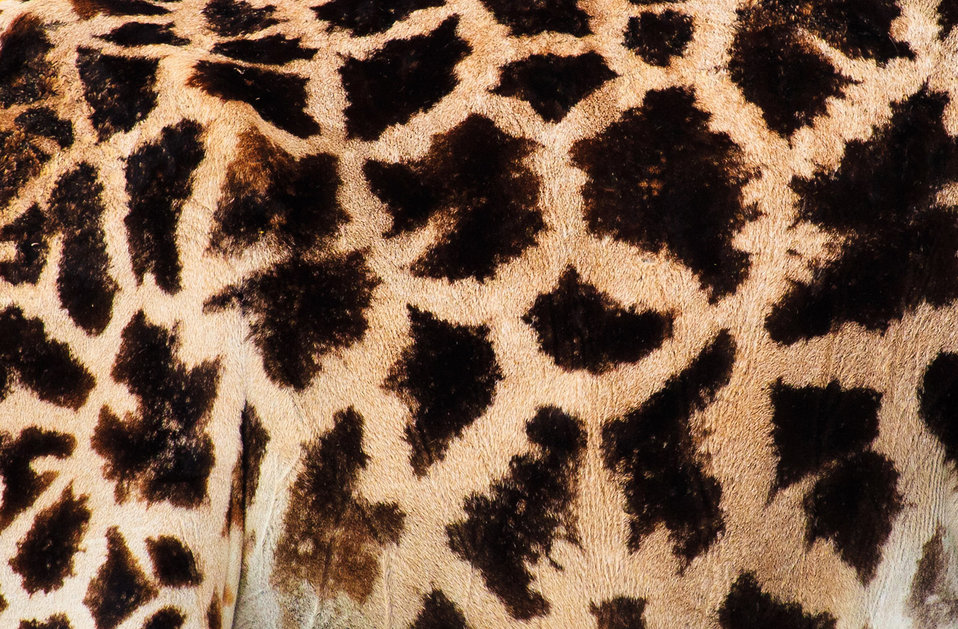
Giraffe texture

Yellow and brown spots on giraffe skin.